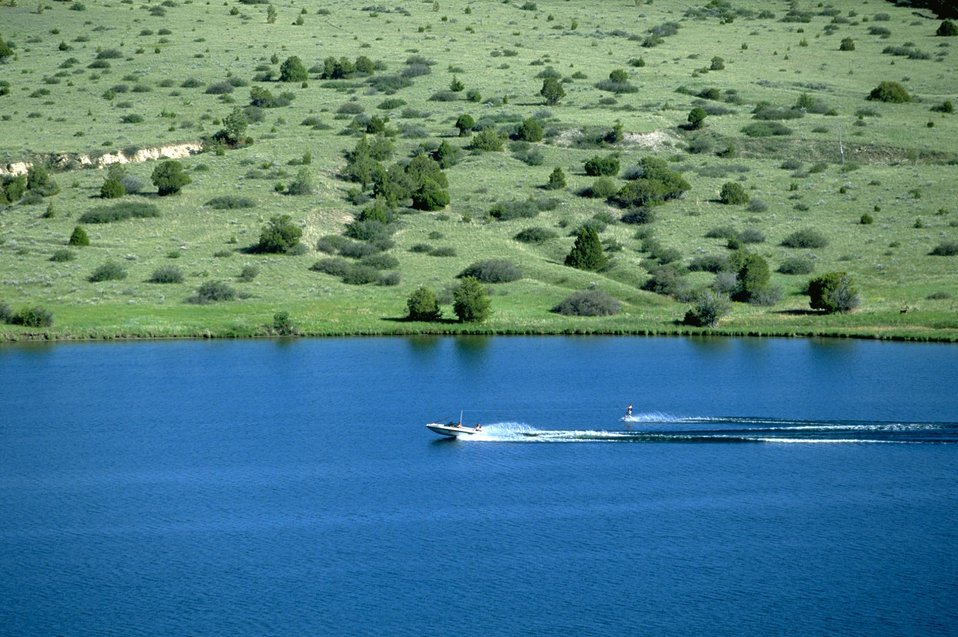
Water skiing on Hauser Lake